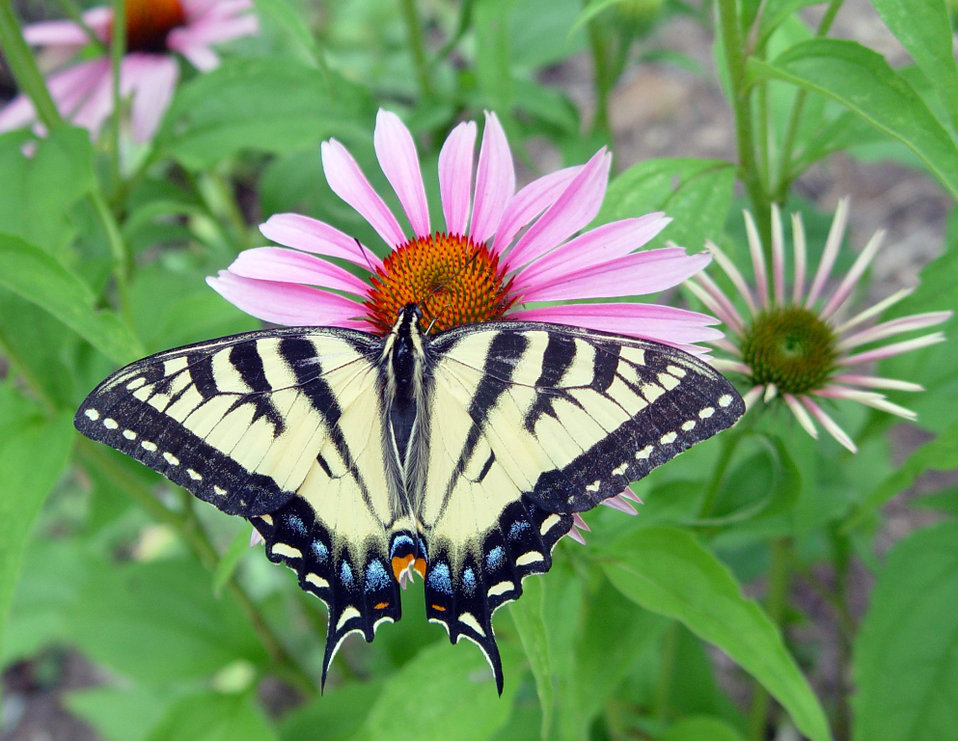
Photo of the Week - Swallowtail butterfly on coneflower, MA

Photo of the week 7/28/2011

Swallowtail butterfly perched on coneflower in Williamsburg, MA.